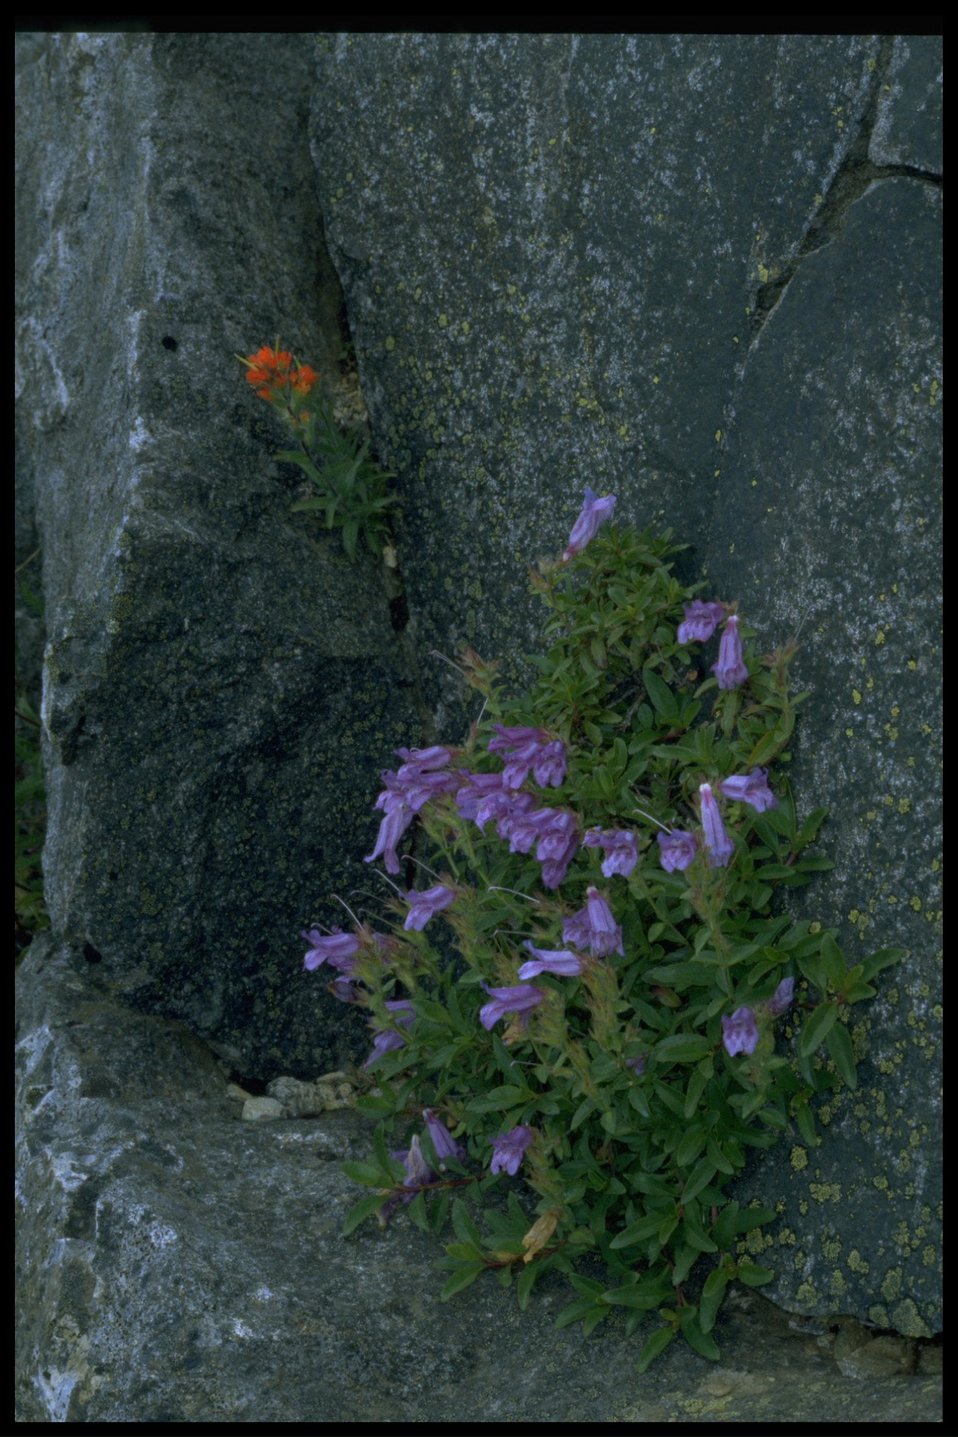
Medium shot of wildflowers (Indian Paintbrush & Penstemon).